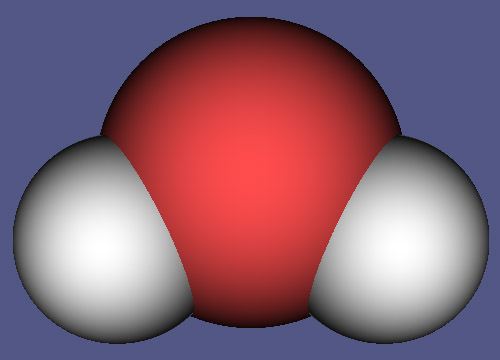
H2O (water molecule)